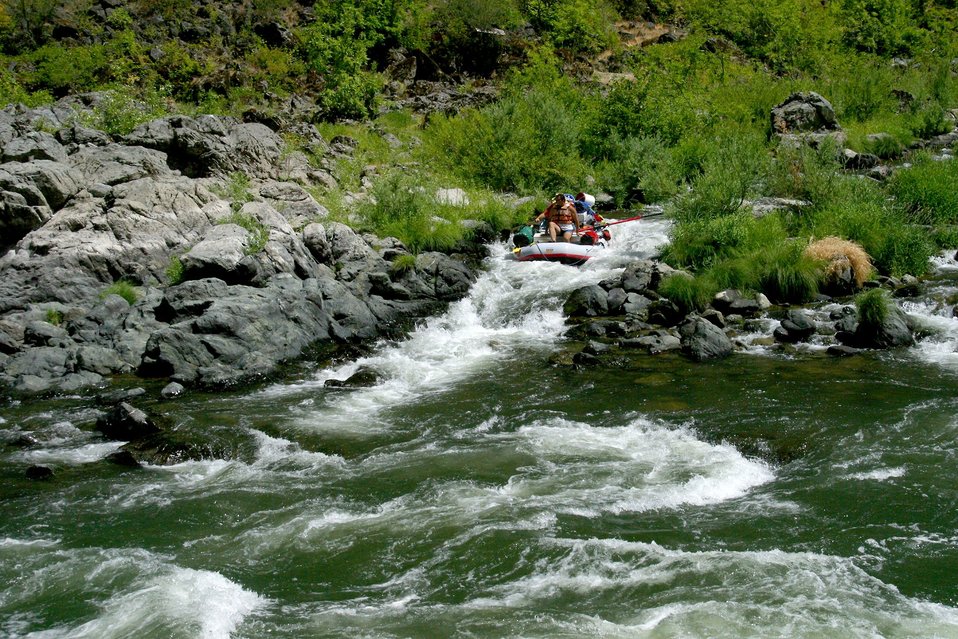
Rainie Falls Fish Ladder